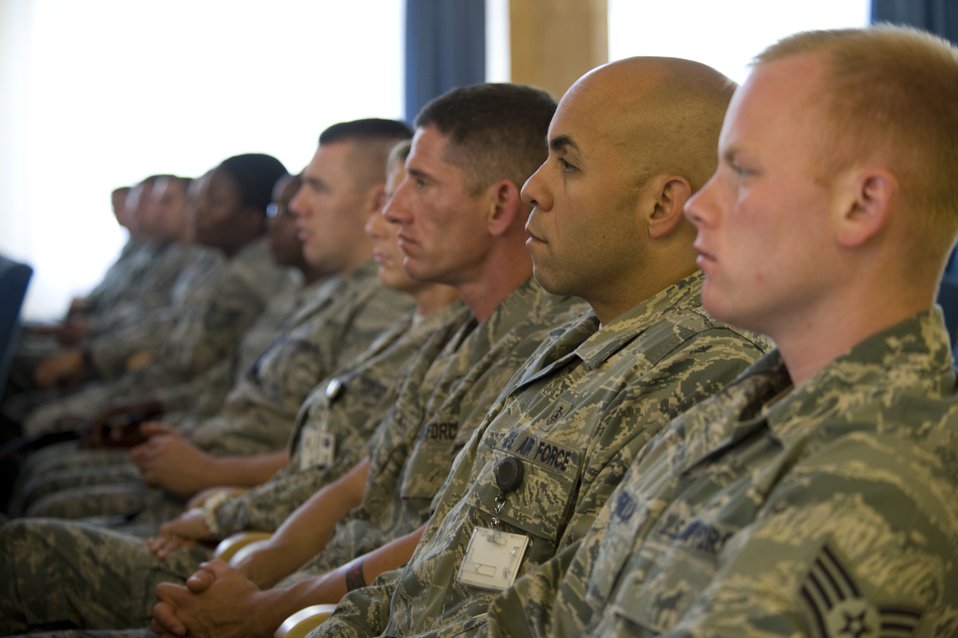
SecAF greets Airmen 5

Airmen assigned to the Heavy Airlift Wing listen as Secretary of the Air Force Michael Donley addresses unit members and their spouses during an